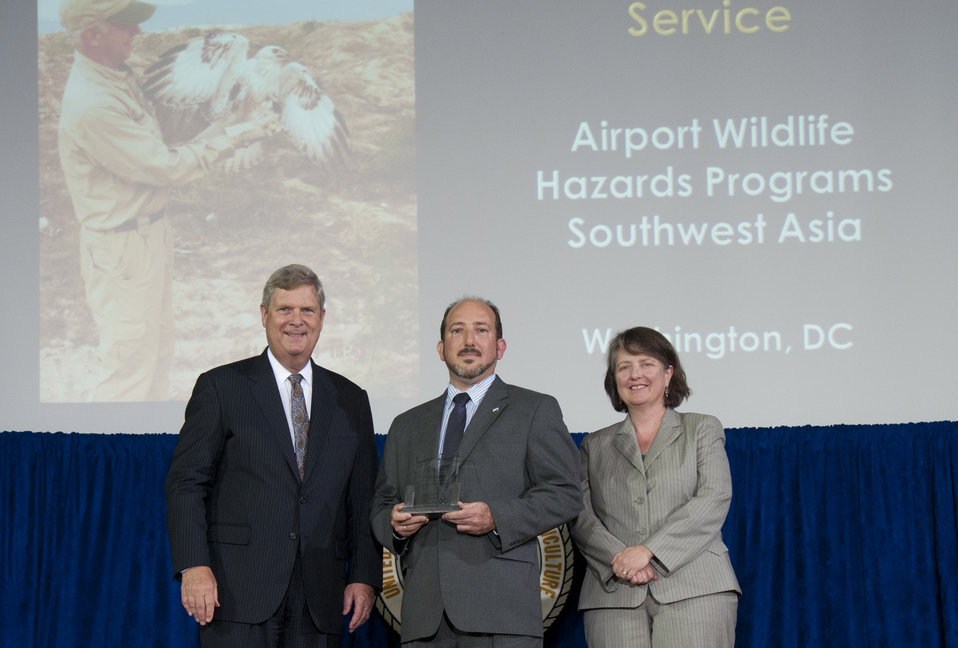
Agriculture Secretary Tom Vilsack and Agriculture Deputy Secretary Kathleen Merrigan present the Secretary’s Honor Award to Airport Wildlife Hazards Programs - Southwest Asia Animal and Plant Health Inspection Service (APHIS) group leader Michael J. Begier at the U.S. Department of Agriculture (USDA) 64th Annual Honor Awards Ceremony in Washington, D.C. on Wednesday, Sept. 12, 2012. The Airport Wildlife Hazards Programs - Southwest Asia Team received their award for the USDA Airport Wildlife Hazards Program- Southwest Asia Group’s efforts to mitigate wildlife strikes to aviation in Iraq and Afghanistan during “Operation Enduring Freedom.”